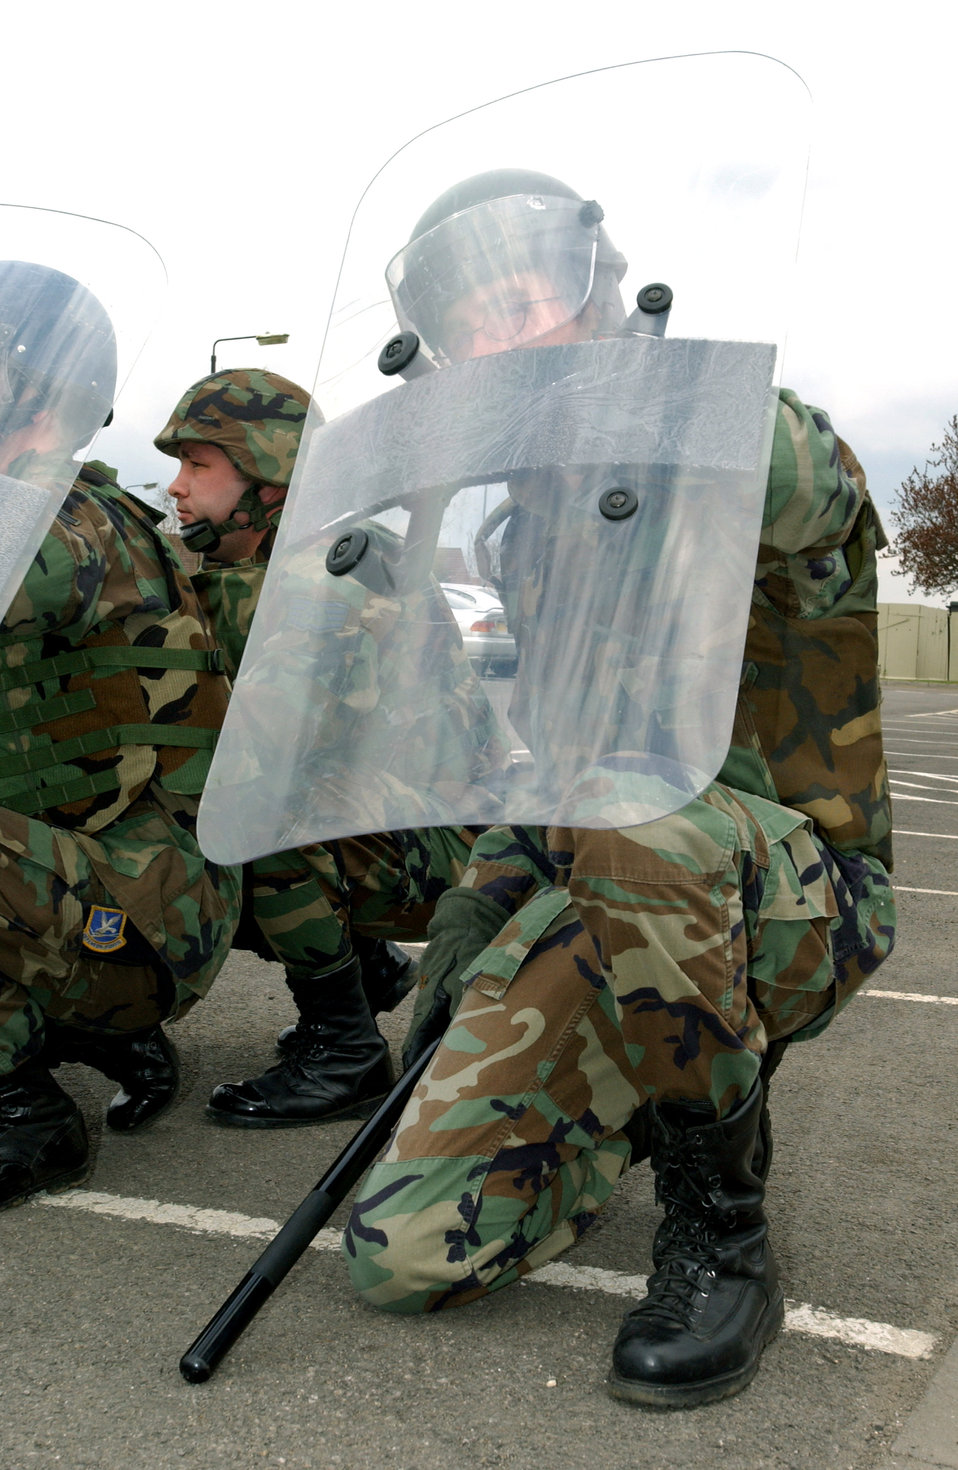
Anger management

ROYAL AIR FORCE FAIRFORD, England - Airmen from the 100th Security Forces Squadron receive training on confrontational management skills here April 8. The training emphasizes the importance of riot control. The 100th SFS is from Royal Air Force Mildenhall, England.